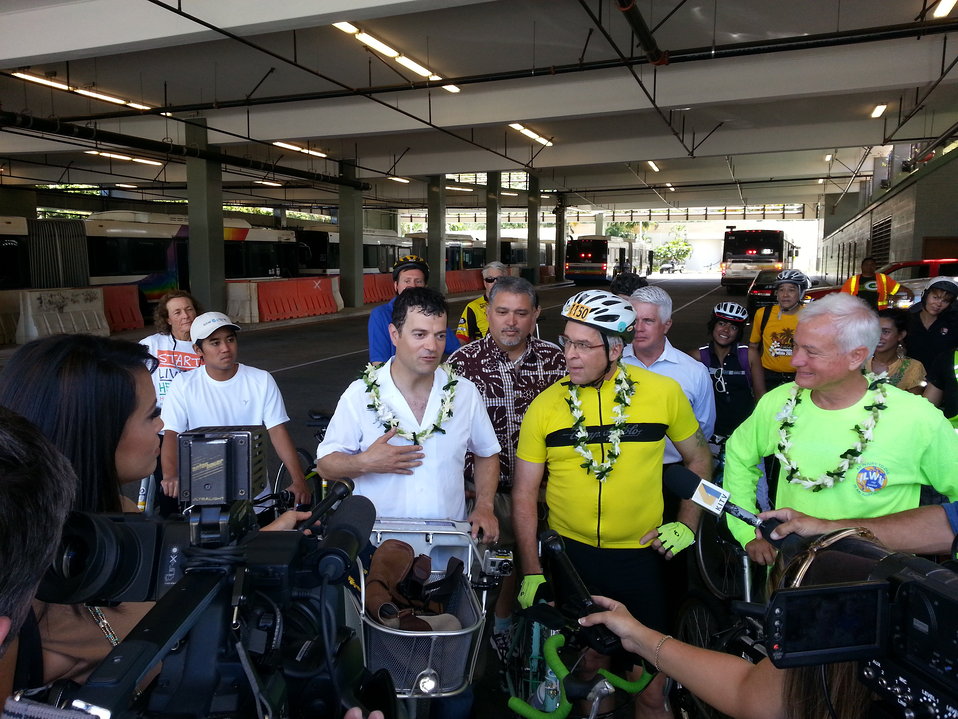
EPA R( Administrator's Visit to HI

Jared Blumenfeld, Regional Administrator for Arizona, California, Hawaii, and Nevada, regularly commutes by bicycle. Here, Blumenfeld, Honolulu Mayor Kirk Caldwell, bicycling advocates, and federal and state officials get ready for a bike ride around Honolulu to emphasize the importance of multi-modal transportation connectivity.